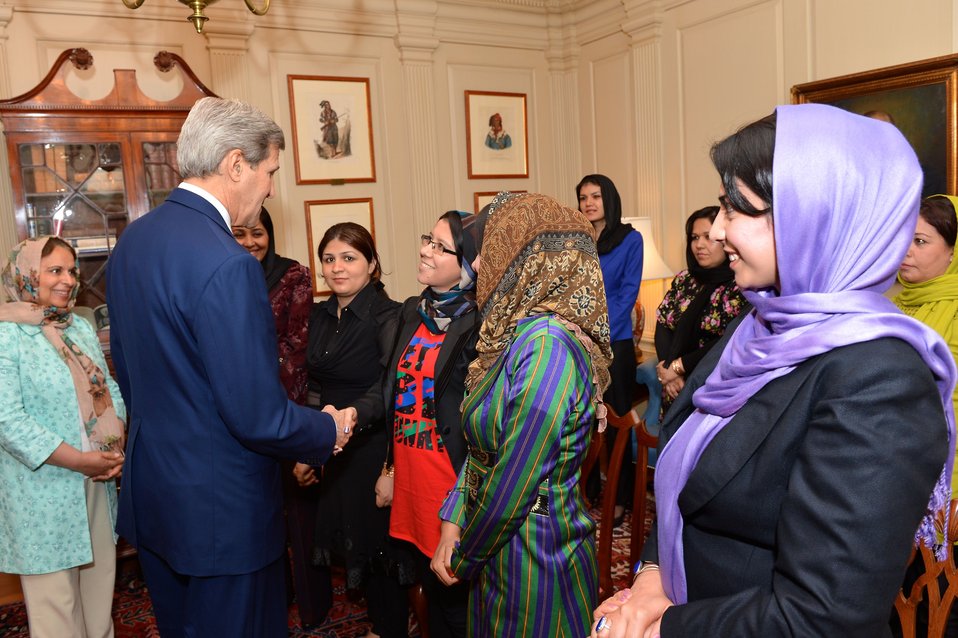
Secretary Kerry Meets With Female Afghan Journalists

U.S. Secretary of State John Kerry meets with women Afghan journalists who are visiting Washington, D.C., on an International Visitors Leadership Program titled, 'Women Journalist and Media Advocacy,' at the U.S. Department of State on May 13, 2014.